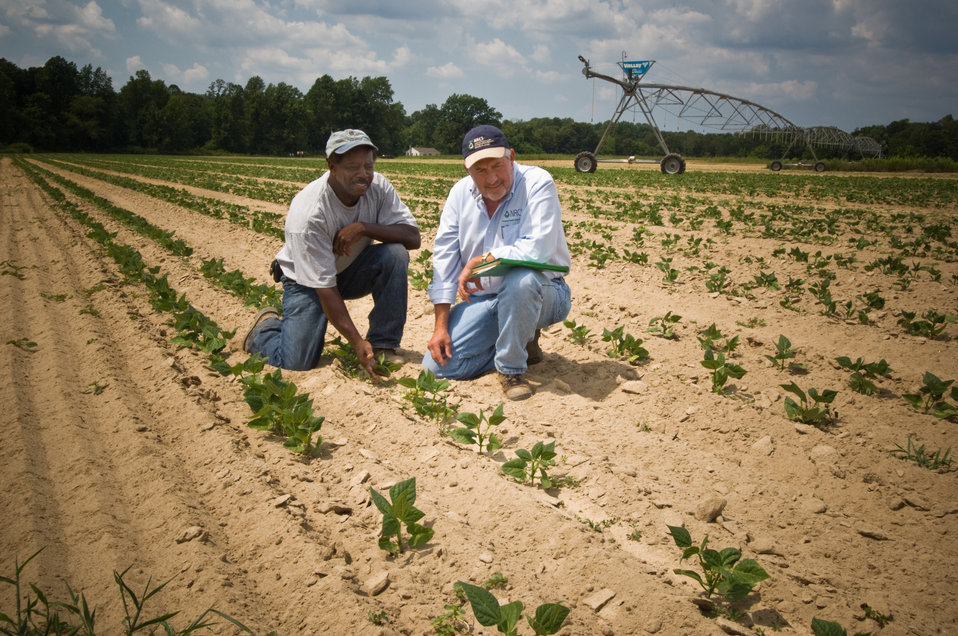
A U.S. Department of Agriculture (USDA) Natural Resource Conservation Service (NRCS) agent consults with a local farmer about irrigating his crops in Caroline County, Maryland on August 12, 2008.